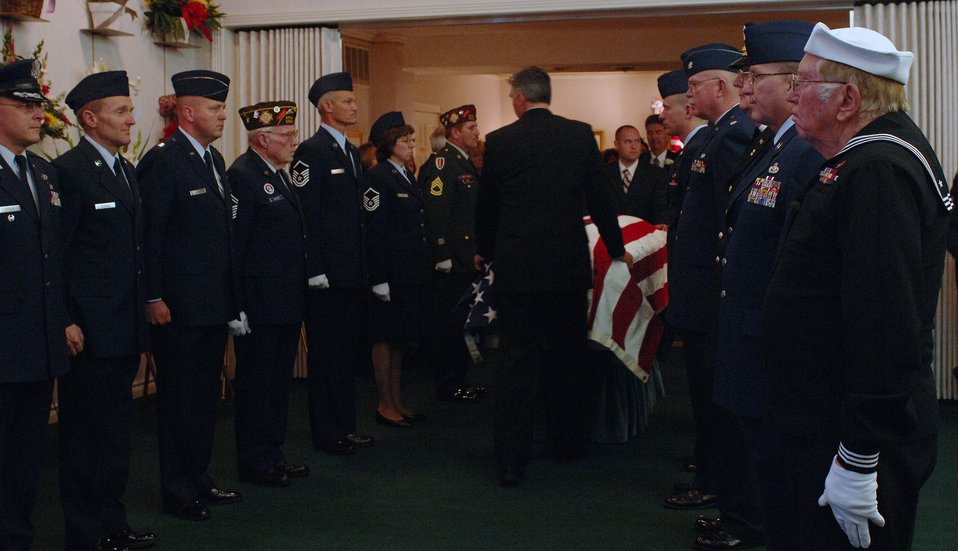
Lt. Col. Chase Nielsen service held March 28

Veterans from Veterans of Foreign War Post 1695, Post 8307 and active duty military members pay their final respects at Lt. Colonel Chase J. Nielsen memorial service in Hyrum, Utah March 28. Colonel Nielsen was one of the few remaining members of the famed Doolittle Raiders. The members of the Doolittle Raiders reached national acclaim in 1942 after launching the first successful aerial bombing raid on Tokyo, Japan as retaliation for the Japanese bombing of Pearl Harbor, Hawaii in December of 1941.